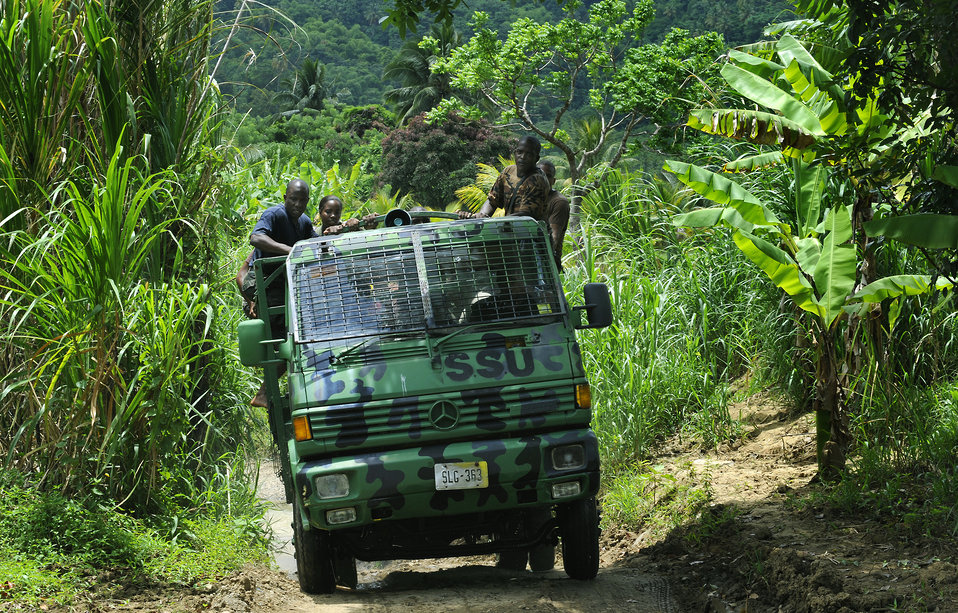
Operation Southern Partner

Members of the Royal St. Lucia Police Force's Special Service Unit make their way through the jungle terrain June 5 in search of a location to practice swift-water rescue procedures that were being taught by U.S. Air Force pararescuemen during Operation Southern Partner at La Toc, St. Lucia. Operation Southern Partner is a long term commitment between U.S. and partner nations to share experiences, information, vital skills, tactics and techniques in preparation for future regional challenges that require cooperative solutions.